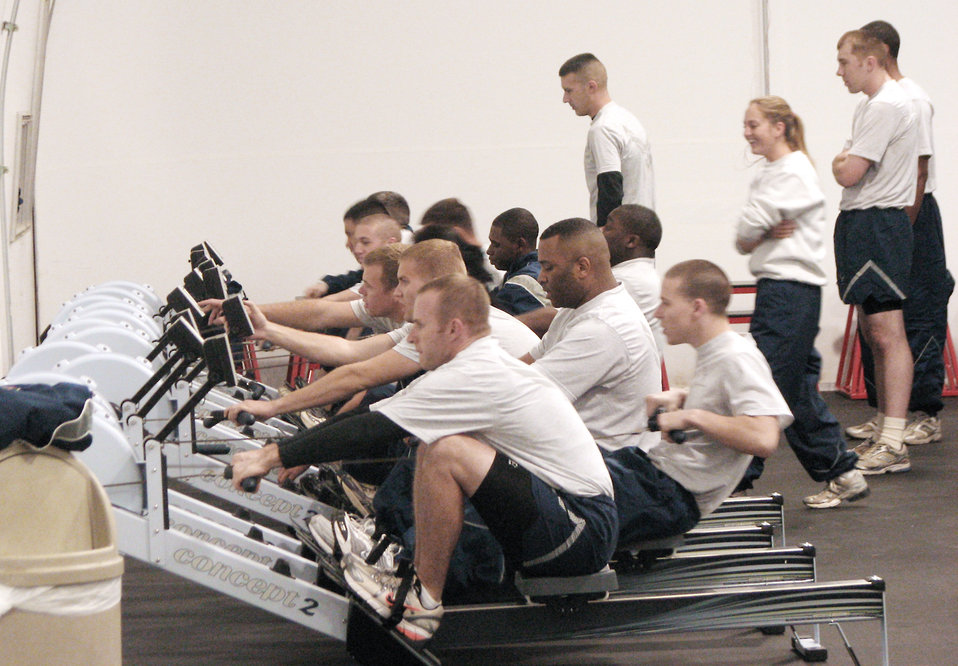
Luke opens combat PT center

Members of the 56th Equipment Maintenance Squadron work on their endurance with the new rowing machines in an early morning physical training exercise Jan. 26, 2010, held at the Luke Air Force Base combat PT center, in Arizona.